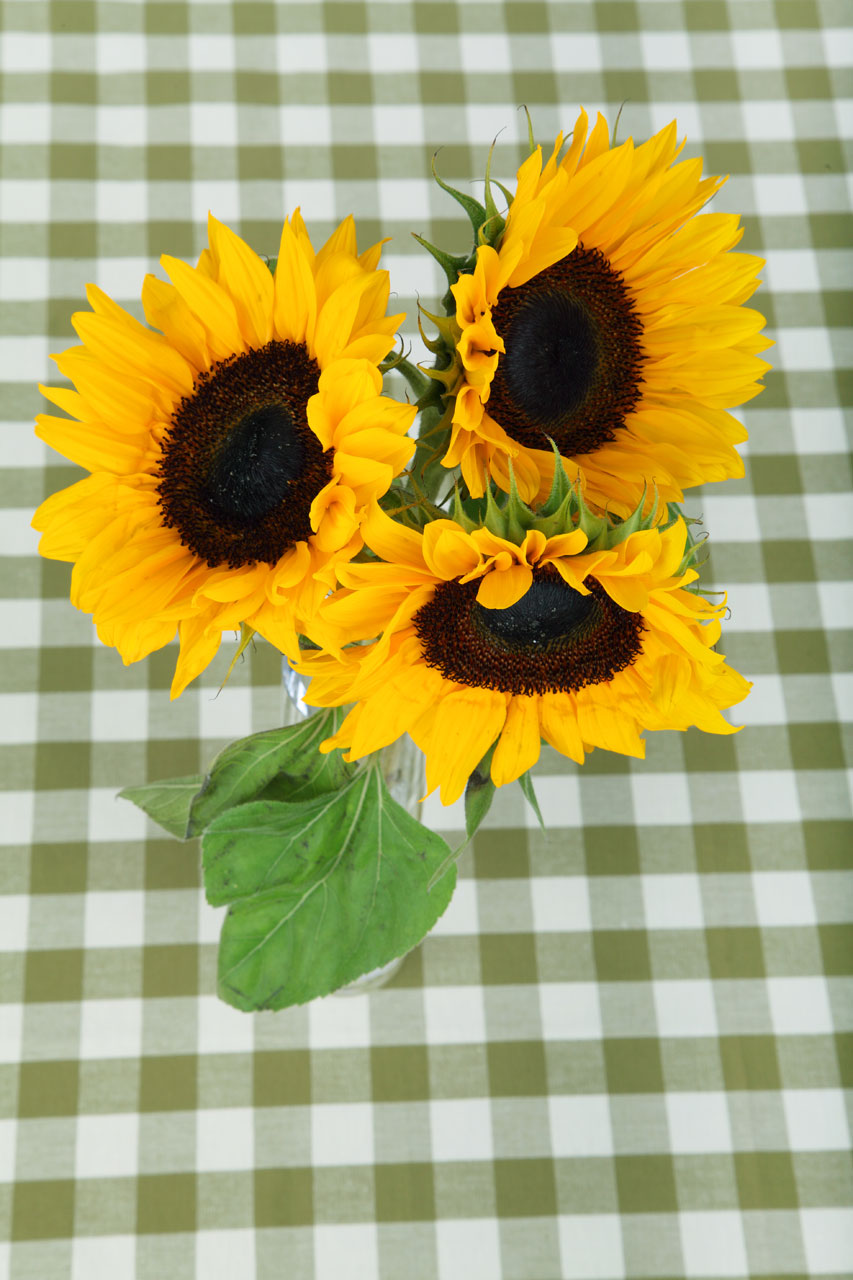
Sunflowers from above

Sunflowers on checkered tablecloth.